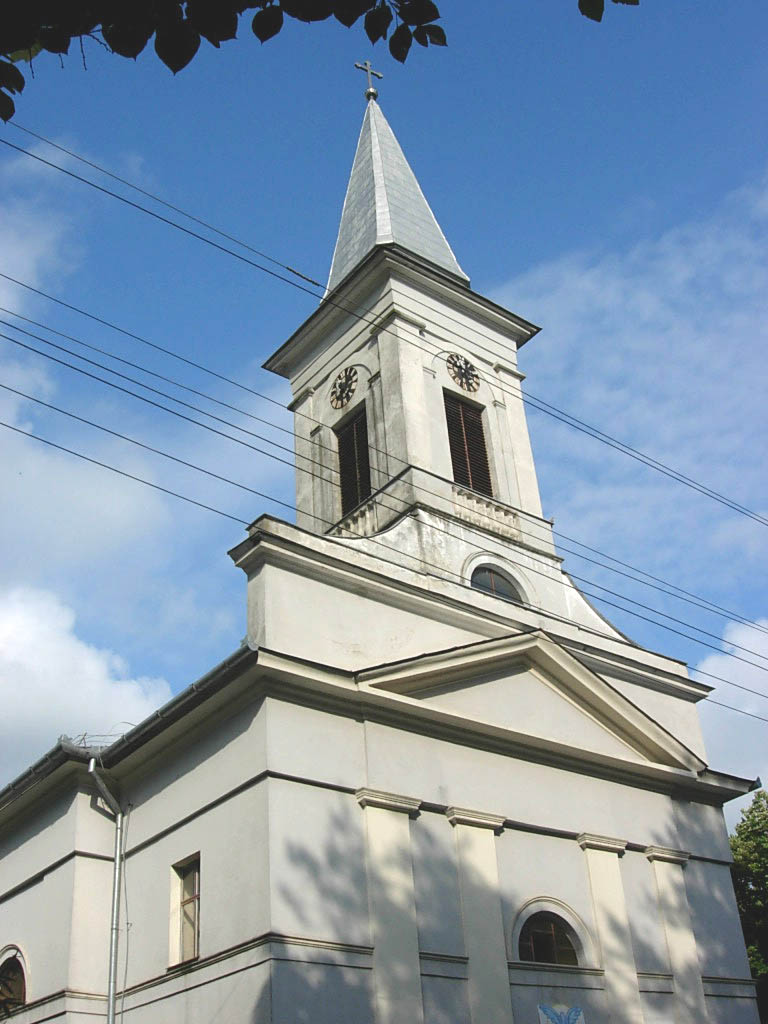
Vajska, Catholic Church